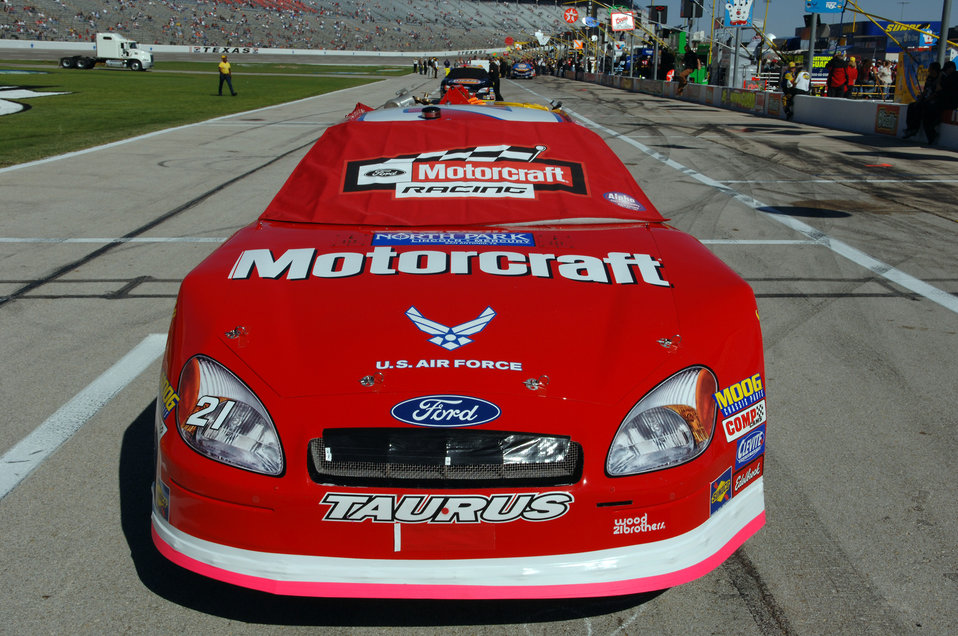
Raceway rumble

TEXAS MOTOR SPEEDWAY, Texas (AFPN) -- The NASCAR Nextel Cup Series Air Force co-sponsored car, number 21, is parked on pit lane prior to the inaugural running of the Dickies 500. This is the fifth straight year of the Air Force sponsorship of NASCAR.